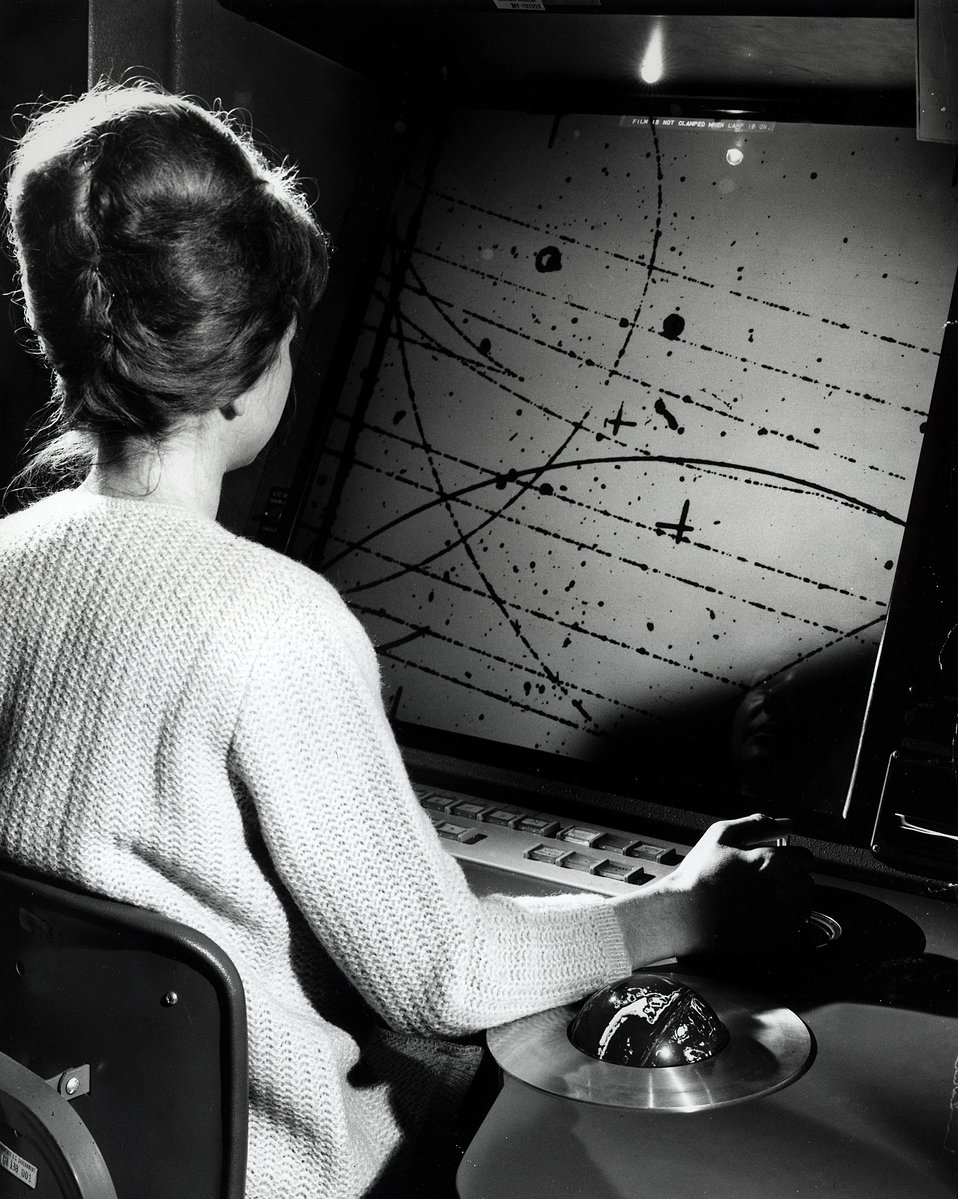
The electronic measuring machine, in use here, automatically plots the selected tracks and digitizes the information for the computer.